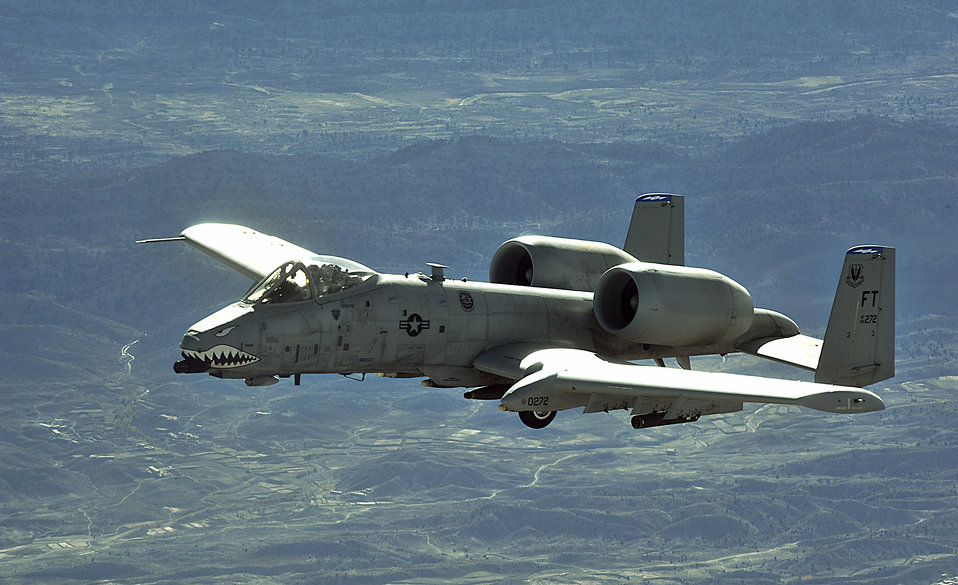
Dec. 26 airpower summary: A-10s conduct shows of force

An A-10 Thunderbolt II flies a combat support mission over Afghanistan in support of Operations Enduring Freedom. A-10s conduct shows of force to deter enemy activities and provide armed aerial overwatch.